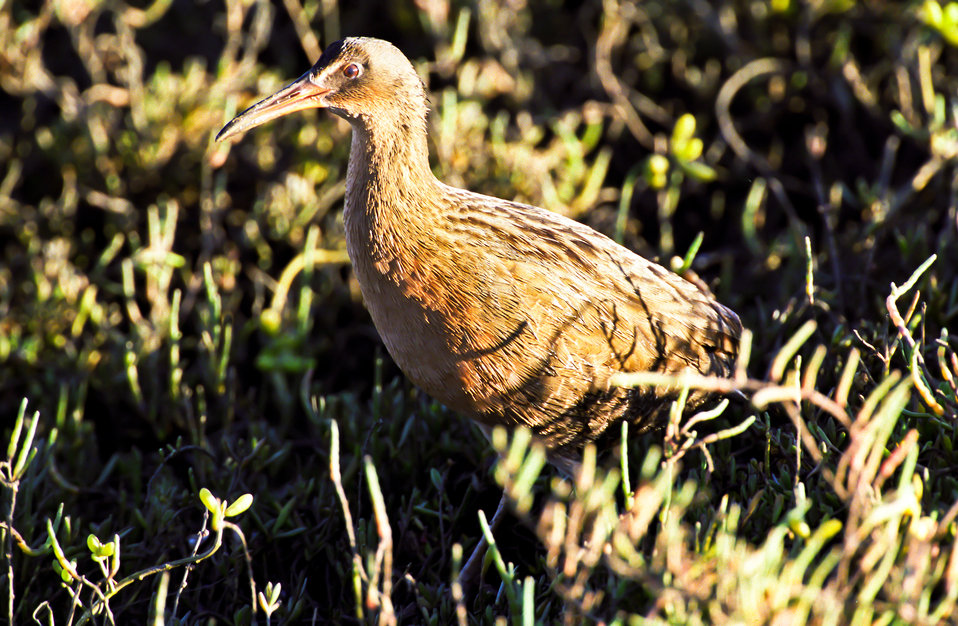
Federally endangered Light-footed clapper rail (adult) in the salt marsh